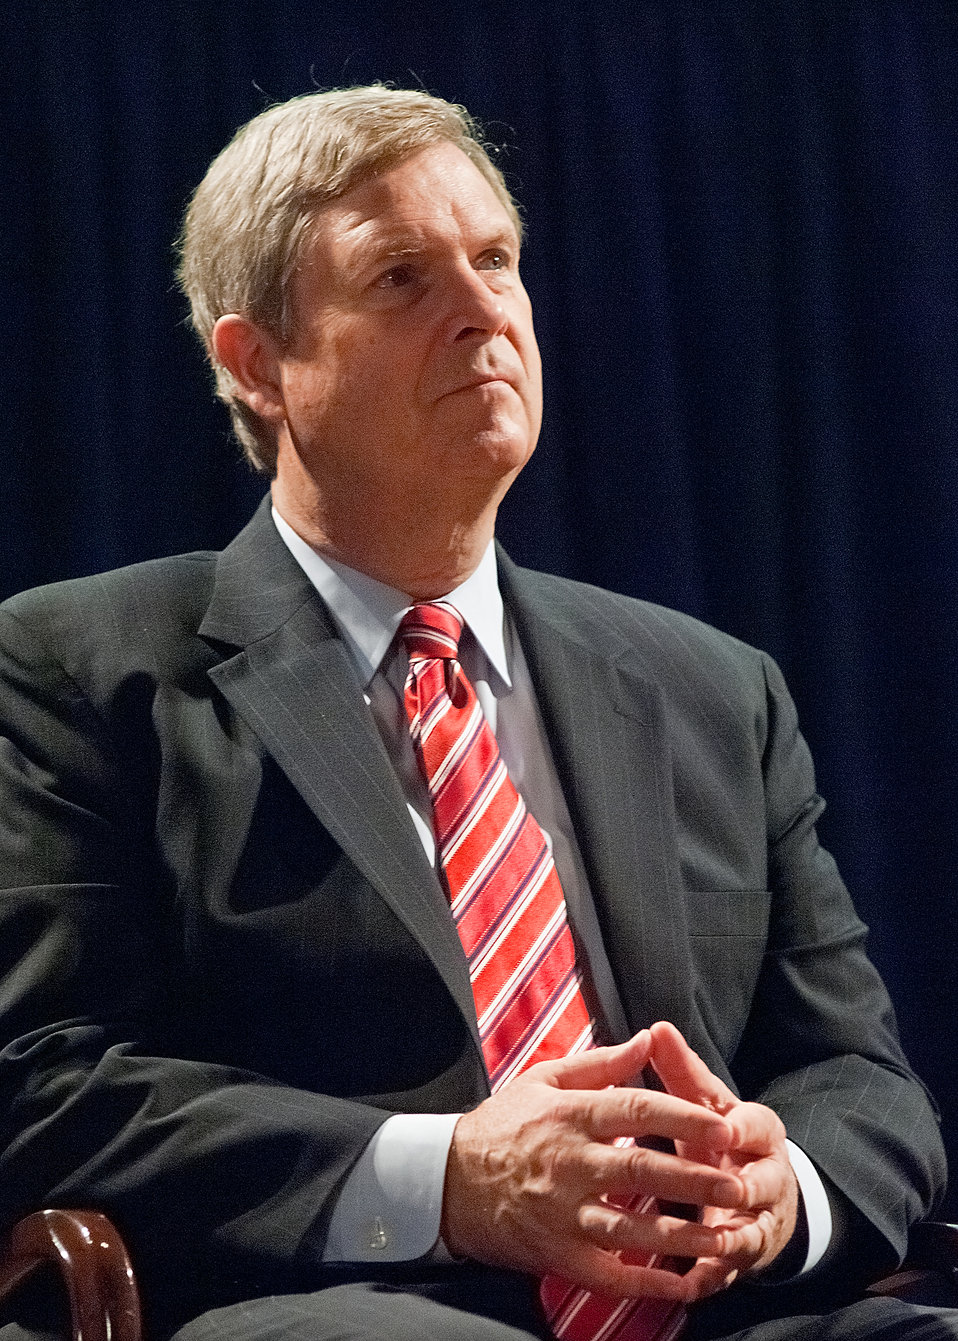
Agriculture Secretary Tom Vilsack listens to First Lady Michelle Obama speak about the new food icon that will serve as a reminder to help consumers make healthier food choices at the United States Department of Agriculture (USDA), Thursday, June 2, 2011. The White House Child Obesity Task Force called for simple advice to consumers with information to help them make healthy food choices. As a result USDA has introduced the new food icon to replace the MyPyramid image representing the food guide pyramid as the government’s primary food group symbol.